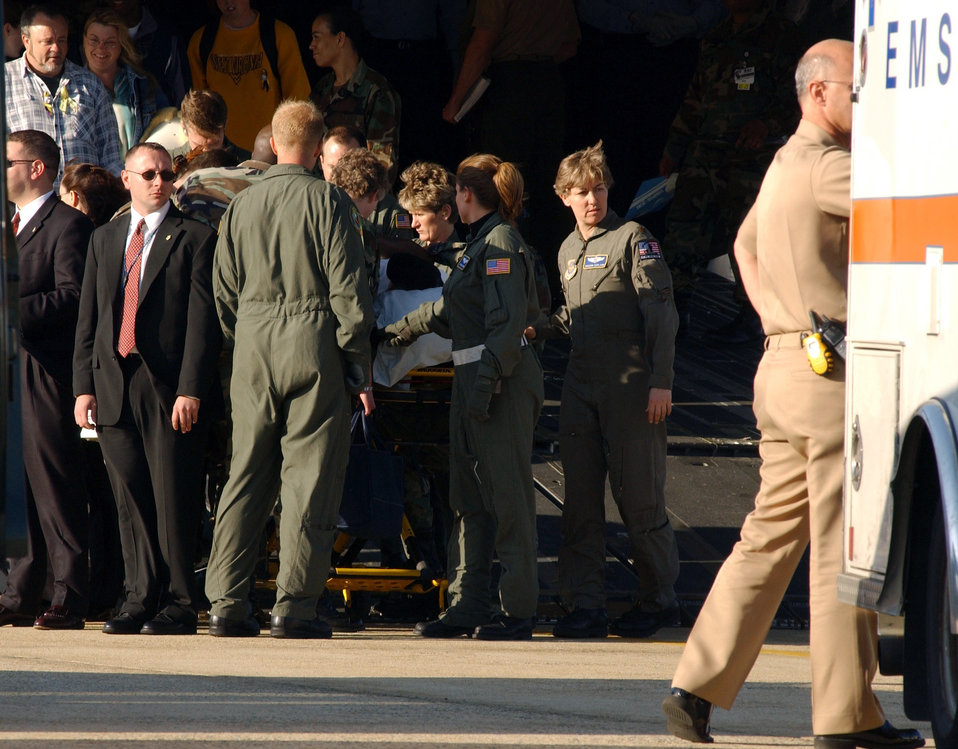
Lynch return

ANDREWS AIR FORCE BASE, Md. -- Army Pfc. Jessica Lynch, a prisoner of war rescued from Iraqi captivity, is carried from a C-17 Globemaster III into an awaiting ambulance here. The ambulance brought her to nearby Walter Reed Medical Center for further treatment.